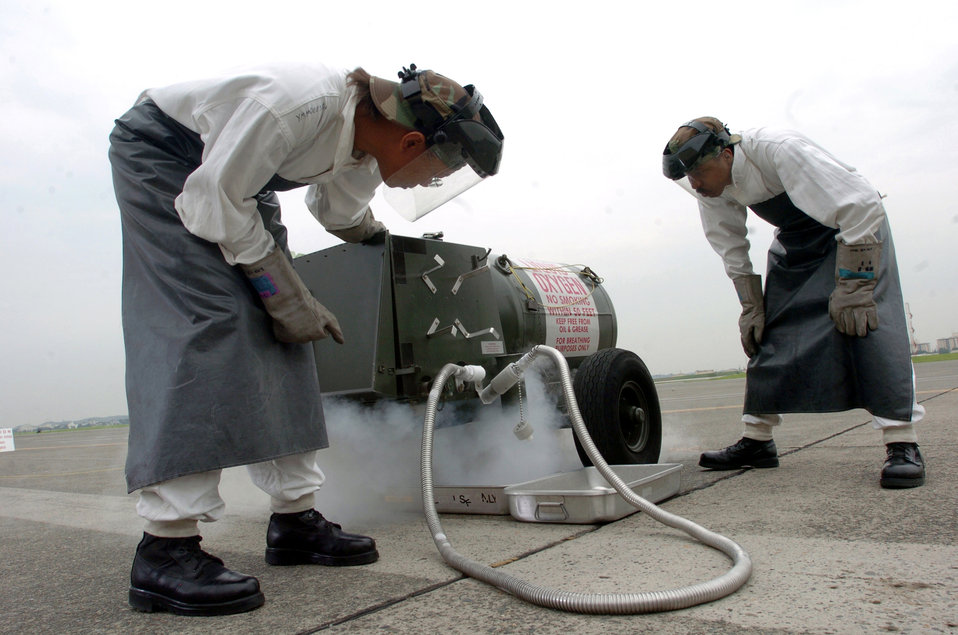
A draining task

YOKOTA AIR BASE, Japan -- Airman 1st Class Andrea Jones (left) and Senior Airman Garry King drain a liquid oxygen cart to test the heat exchanger for serviceability. Technicians with the 374th Maintenance Squadron here inspect, calibrate, repair and maintain cryogenic/compressed gas units.